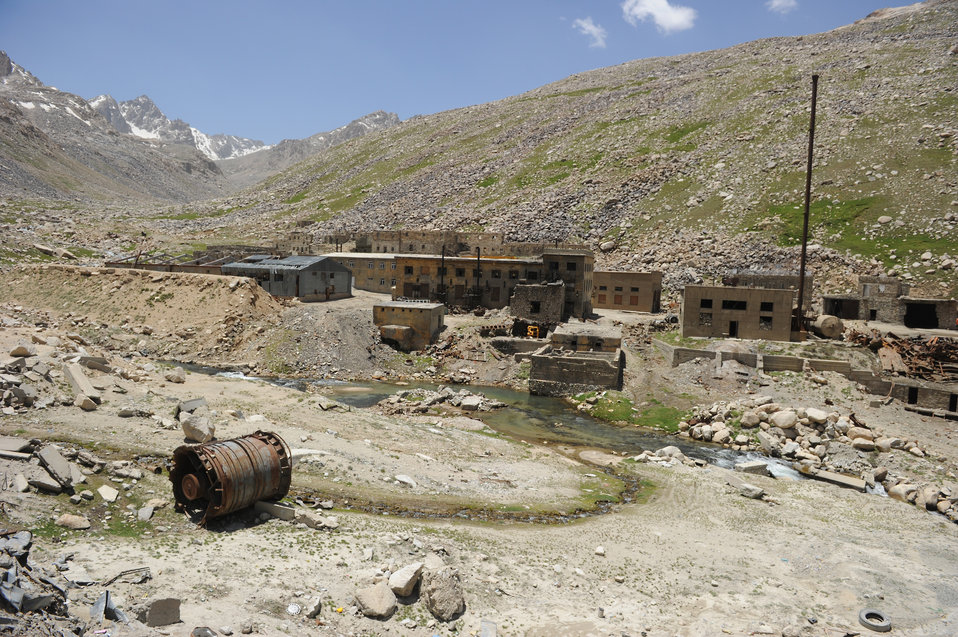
Across the river from the North entrance of the Salang Tunnel on the border of Parwan and Baghlan Provinces, Afghanistan, on Wednesday, June 15, 2011. (S.K.Vemmer/Department of State)